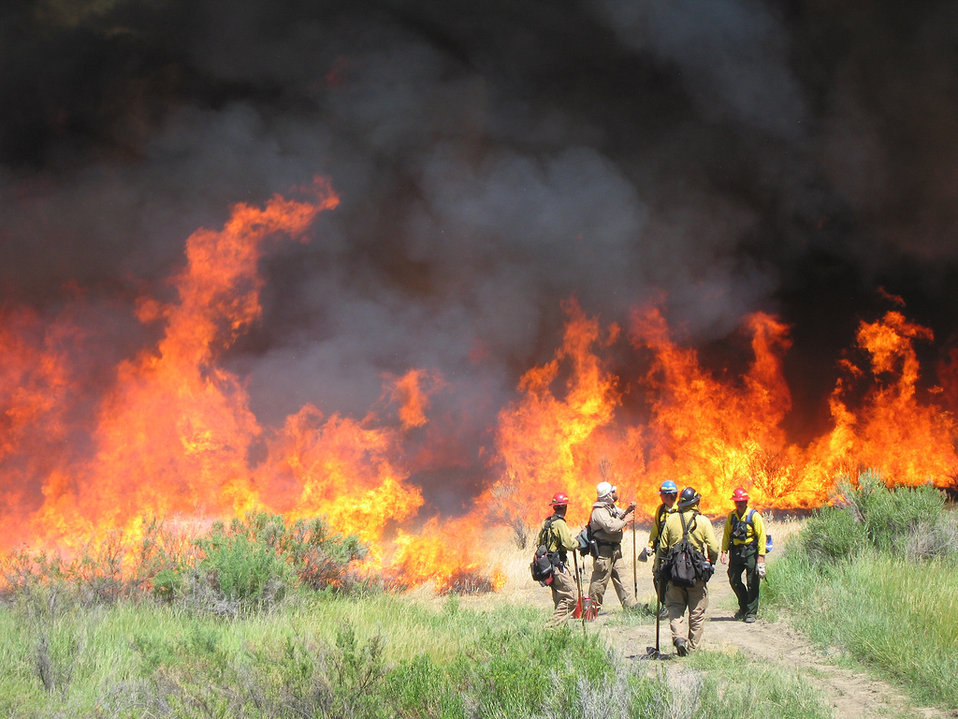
Charles M. Russell National Wildlife Refuge, MT

Prescribed fire